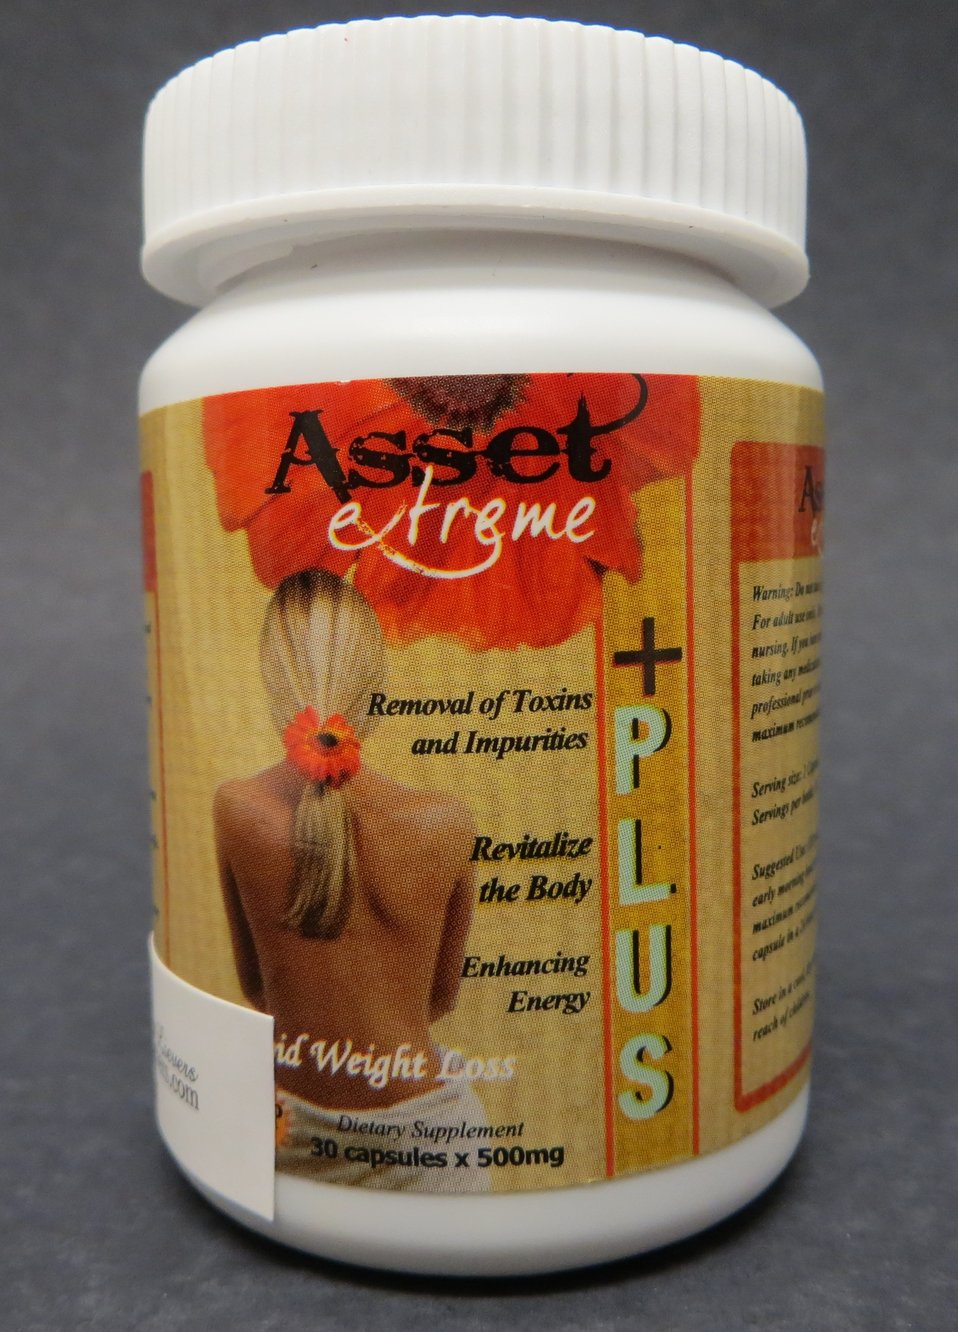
Asset Extreme Plus

December 19, 2013 - The FDA is advising consumers not to purchase or use 'Asset Extreme Plus,' a product promoted and sold for weight loss. The product was found to contain undeclared sibutramine. For more information, go to www.fda.gov/Drugs/ResourcesForYou/Consumers/BuyingUsingMe...

And read this Consumer Update: Beware of Fraudulent ‘Dietary Supplements’